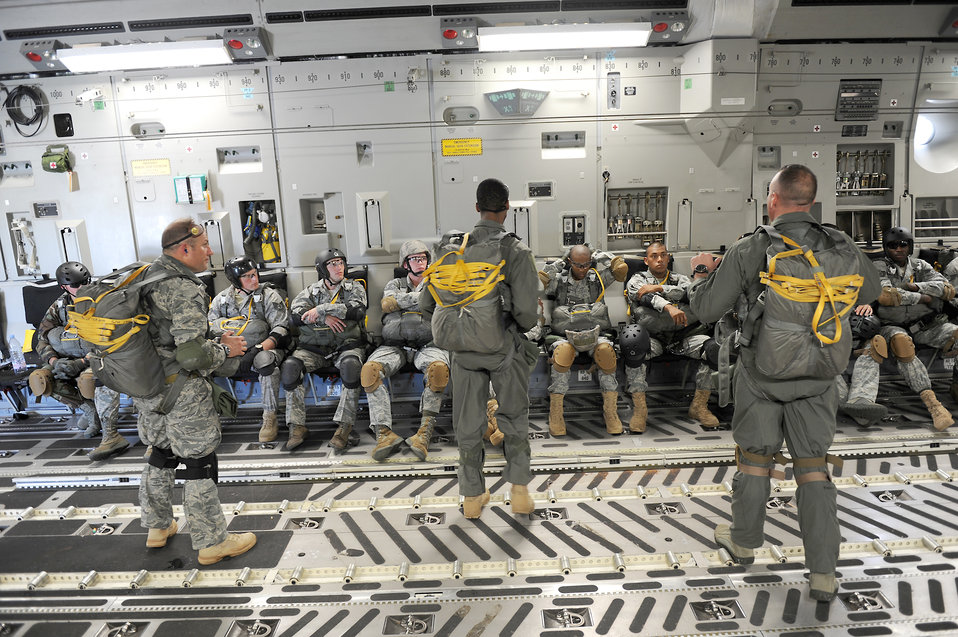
Static-line jumps over Guam

Jumpmasters from the 36th Contingency Response Group go over the details of the afternoon static-line jumps during proficiency training Jan. 13, 2011, at Andersen Air Force Base, Guam. An aircrew from the 535th Airlift Squadron provided flight time for the 36th CRG's proficiency training.